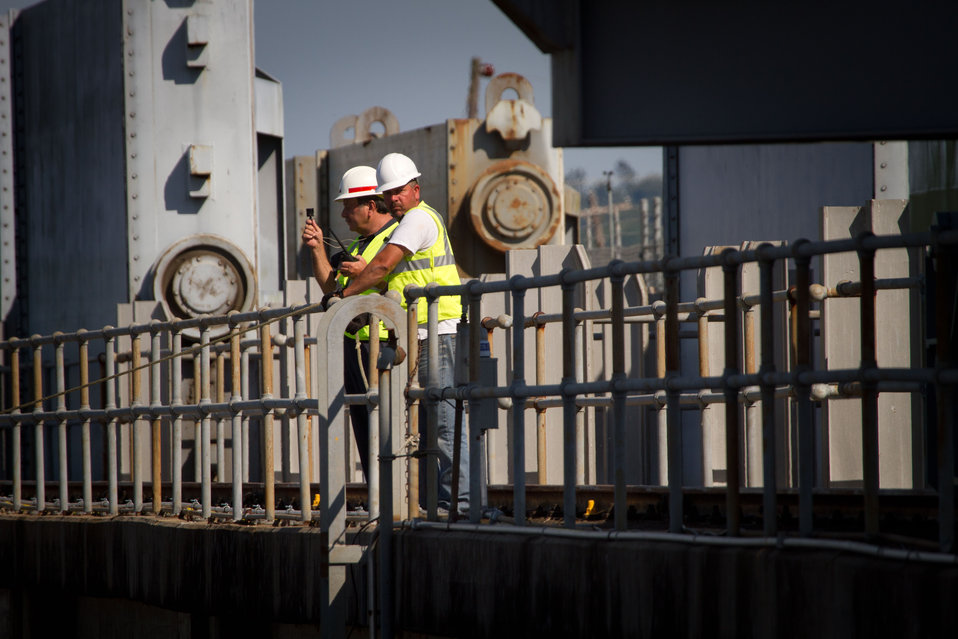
The Army Corps of Engineers conduct daily depth measurements along the intake side of The Old River Control Complex, Low Sill Structure in Concordia Parish, LA, on Tuesday, May 17, 2011. The measurements tell both the condition along the intake “ramp” and allow them to calculate the flow through the gates. The Old River Control Complex is designed to channel as much as 30 percent of the Mississippi River’s flow into the Gulf of Mexico through it’s eleven 44-foot wide gates across 566 foot span that separates the Mississippi and (the outflow channel to the) Red and Atchafalaya Rivers. Rated at 300,000 million gallons per minute (note: That’s more than seven Olympic sized swimming pools every second). Although this helps the Mississippi River, it (along with other concerns, puts back pressure on the Red River and other waterways, possibly causing some flooding of farms to avoid a catastrophic breech of the levee system. Most of the gates have been opened by a rolling crane and stored in racks. Debris, some as larger than telephone polls make their way through the gates and pool in eddies. The constant motion and contact with other objects, strip trees of their branches and bark. 20-30 pound Carp can frequently be seen jumping out of the white water.